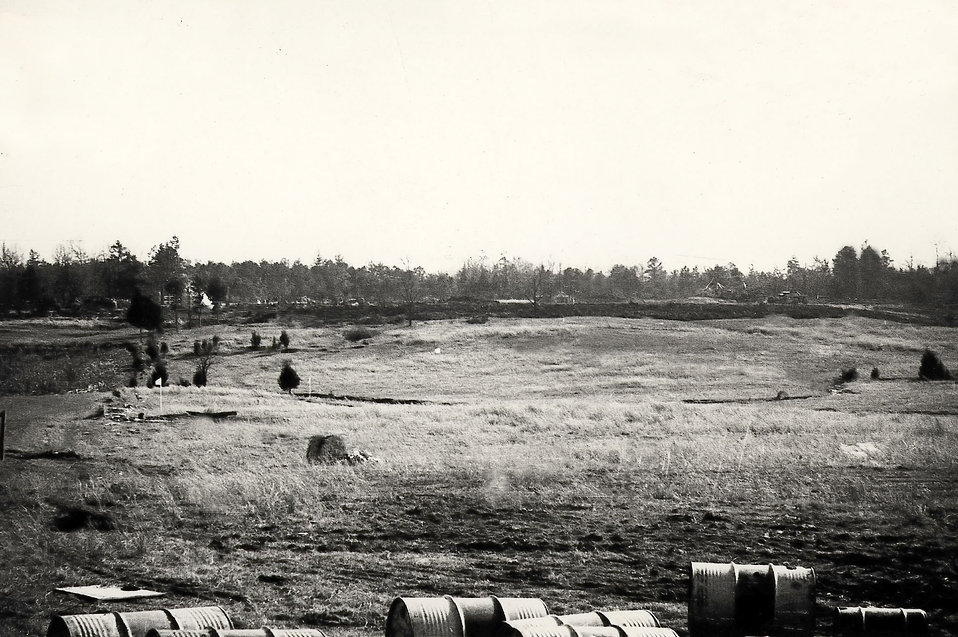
Land for AEC Adm. Bldg Oak Ridge

1-28 12-12-42
This photograph, taken on Dec. 12, 1942, shows the proposed site for the administration building from the main highway. The grading of the land had already begun.